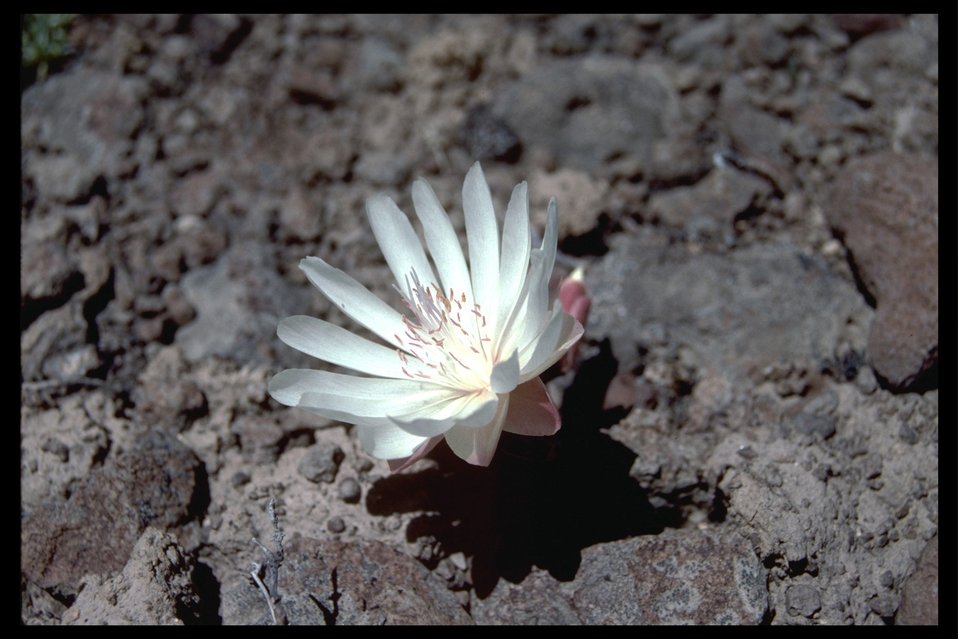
Bitterroot Lewisia vediviva, south of Square Mountain in the Rincon WSA. (2-82)